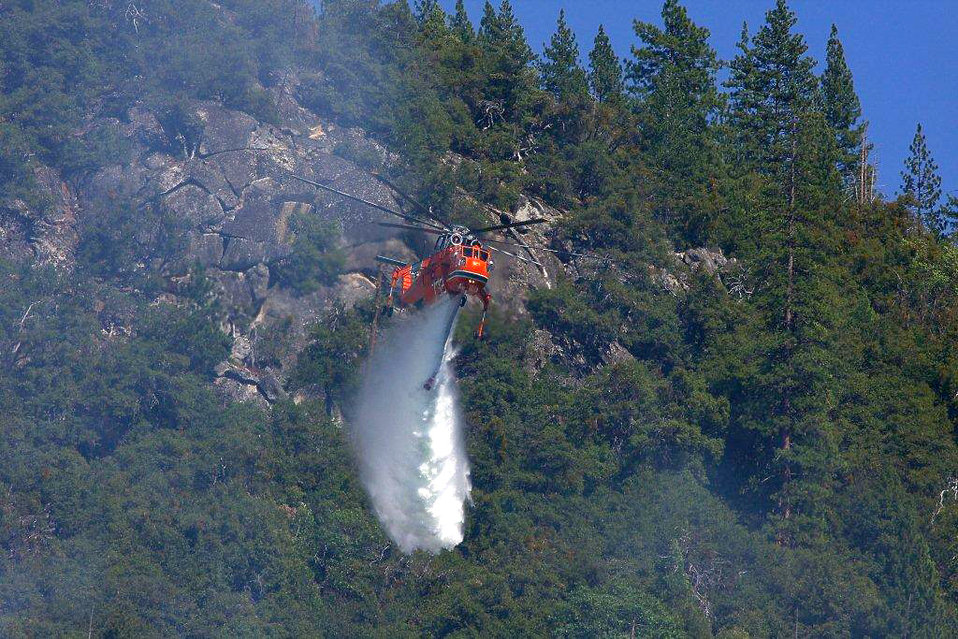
A skycrane drops 2,000 gallons of water in a strike against the Power Fire in California. The Power Fire in the Stanislaus National Forest near Beardsley Reservoir in California began on Aug. 5, 2013 is under investigation. The fire has consumed 881 acres and is 32% contained.